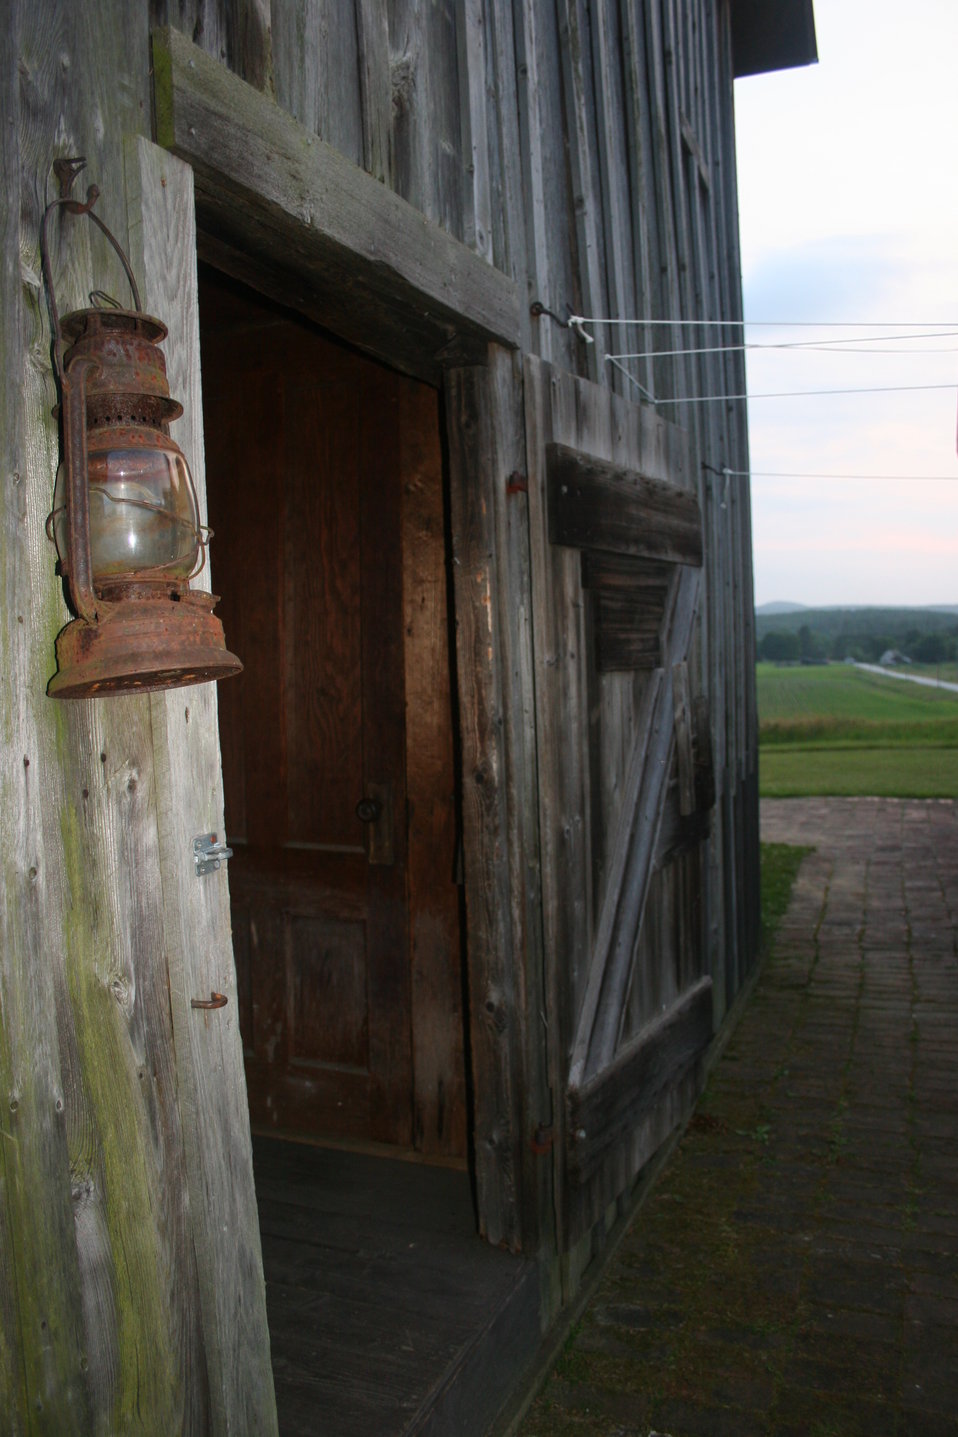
barn

The barn with maternity colony of little brown bats.